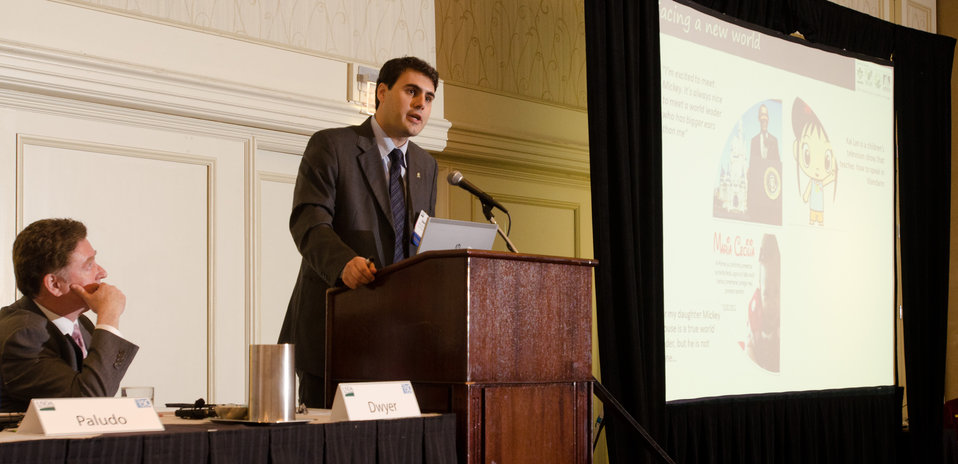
Seneri Kernbeis Paludo spoke about ”Domestic Consumption’s Impact on Export Potential in Brazil” during the Food Prices & Farm Income session on “Export Opportunities and Competition in Brazil, Russa, India, and China (BRIC) Countries,” during the 2012 Agricultural Outlook Forum, “Moving Agriculture Forward, Growing, Innovating and Celebrating 150 Years” held at the Crystal Gateway Marriott Hotel in Arlington, Virginia, on Thursday, February 23, 2012. This year’s forum coincides with the 150th anniversary of the Department of Agriculture addressing economics, marketing, research, food safety, nutrition, conservation, rural development, alternative energy, trade and many other agricultural issues.